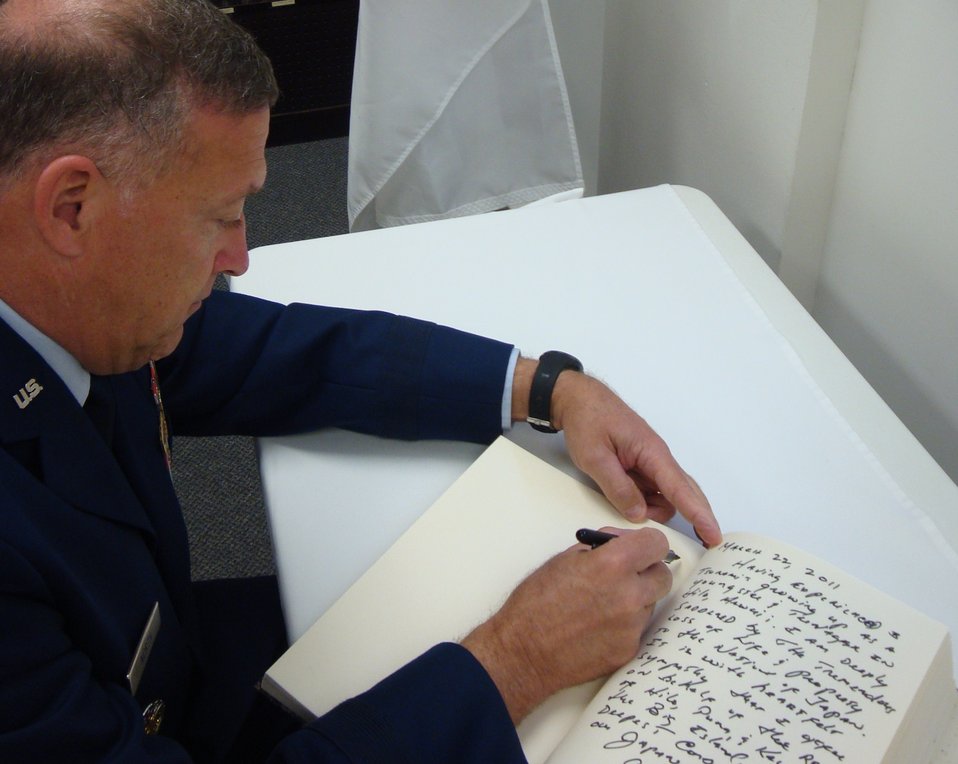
COMPACAF signs Japanese condolence letter

Gen. Gary North, Pacific Air Forces commander, conveys his sympathy for the Japanese people in a condolence book March 22, 2011, at the Consulate General of Japan in Honolulu. The condolence book, signed by federal, state, city and county government agency officials and U.S. military leaders, held expressions of sympathy for the deadly destruction after the earthquake and destructive tsunami hit Japan March 11.